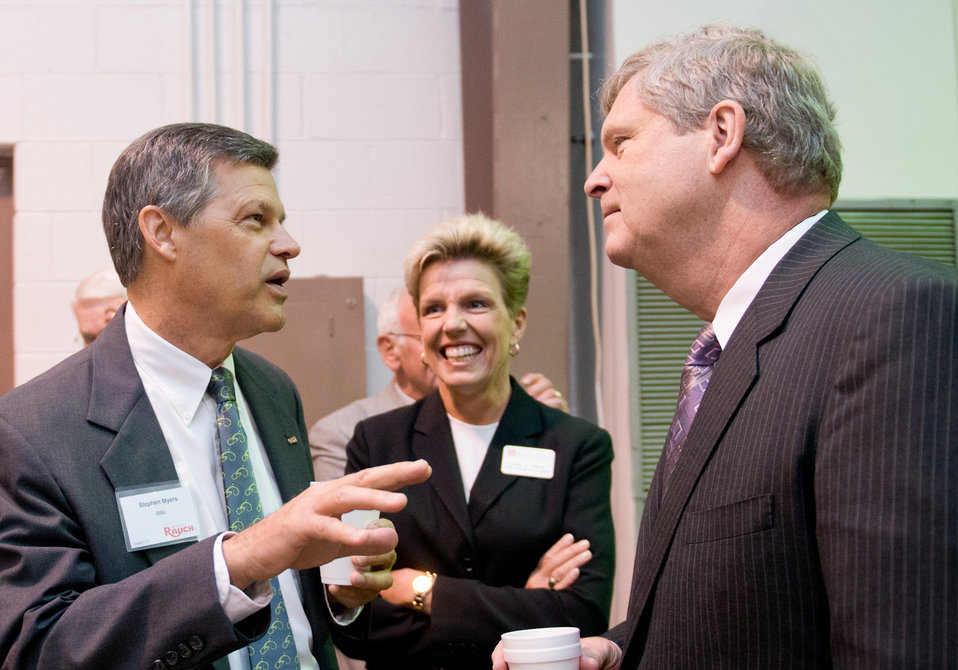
Executive Director for the Ohio BioProducts Innovation Center at The Ohio State University (OSU) Stephen Myers (left), Government Relations at The OSU Director Gwen Wolford (middle), and Agriculture Secretary Tom Vilsack (right) discuss the new bioresearch projects at The OSU at the Ohio Agricultural Council Hall of Fame Breakfast in Columbus, OH on Friday, August 3, 2012.